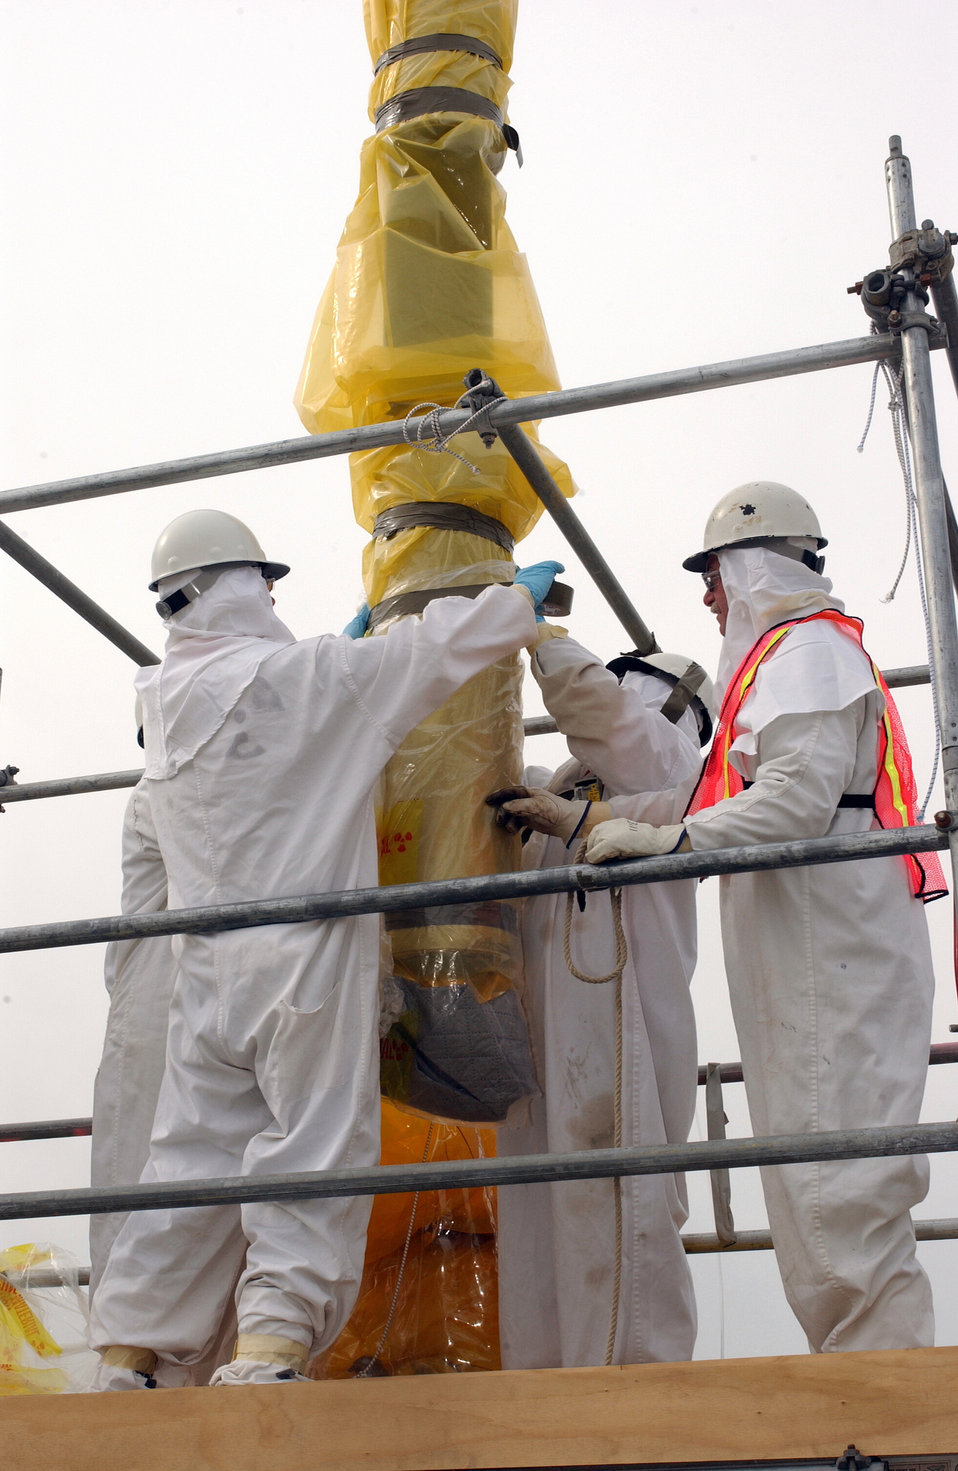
Workers are shown installing a pump in C-109, a single-shell tank that once held 63,000 gallons of waste.

The pump was a critical tool in removing the waste from the tank and transferring it to a newer receiving tank for storage.